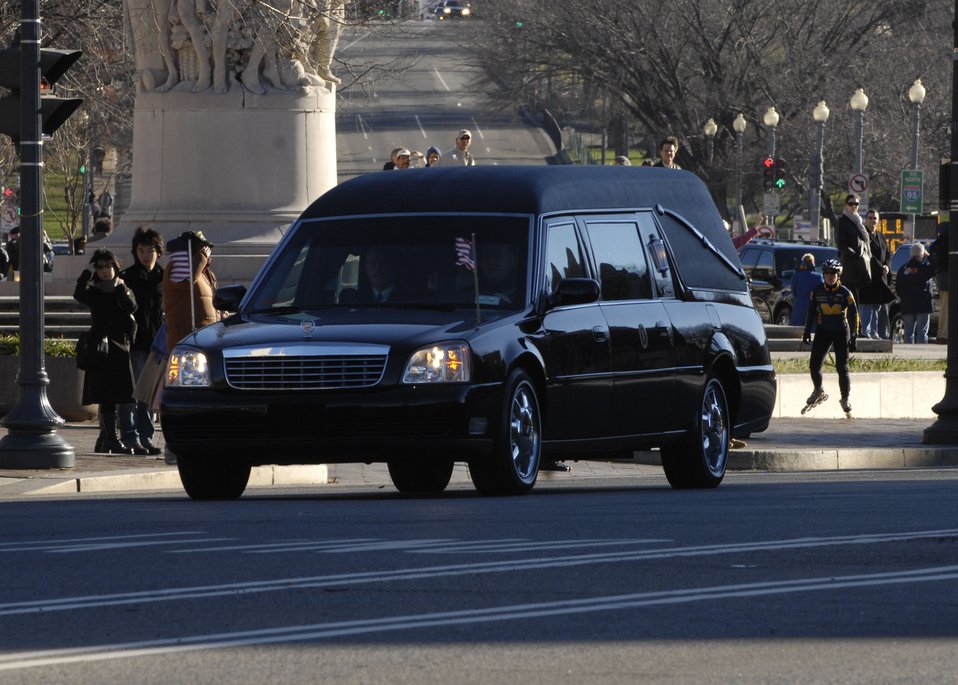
Honor Guard helps lay President Ford to rest

A funeral procession for former President Gerald R. Ford heads to the National Cathedral in Washington, D.C., following his departure from the U.S. Capitol on Jan. 2. The president's final resting place will be in his hometown of Grand Rapids, Mich., at a site just north of the Gerald R. Ford Museum.